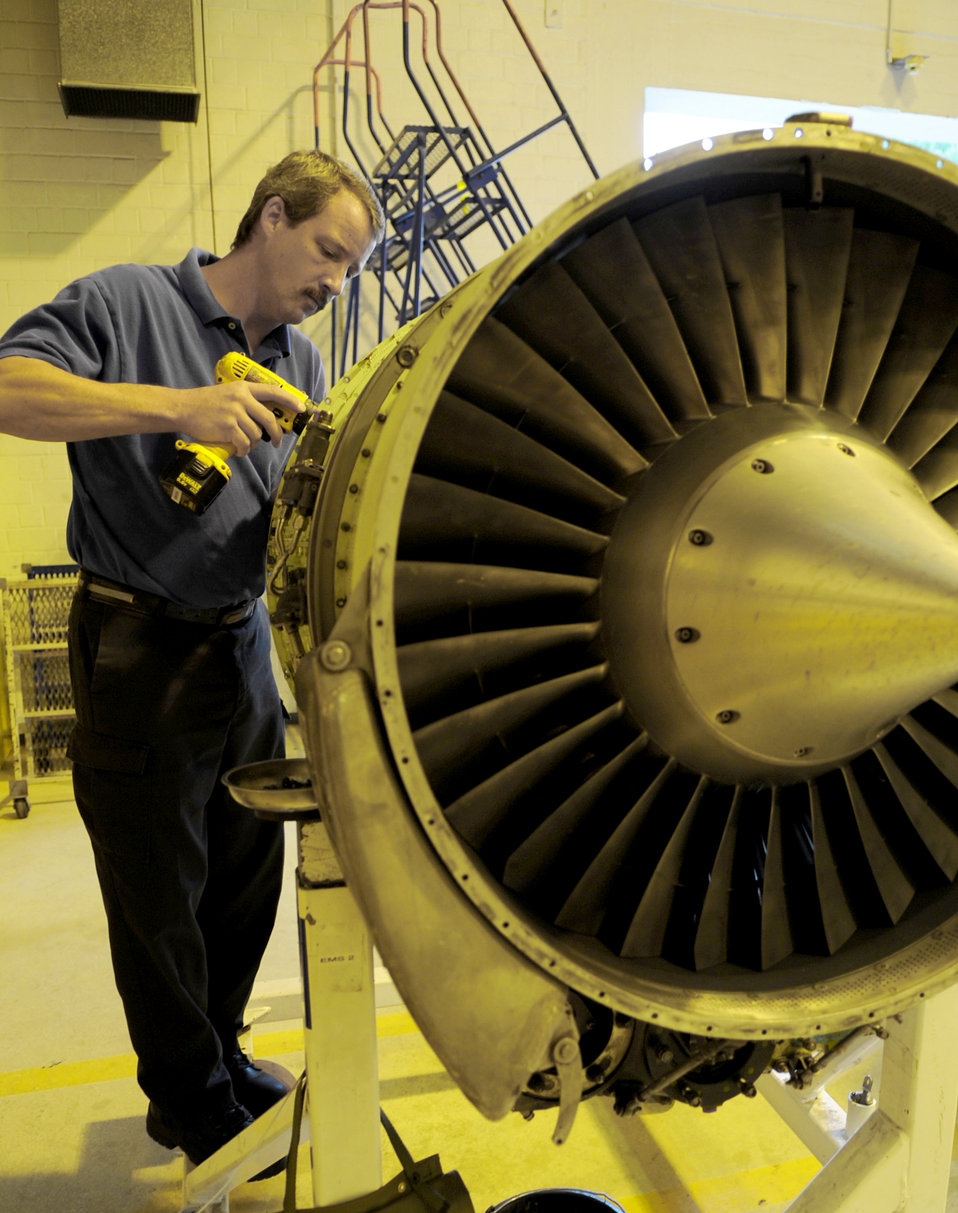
Taking it apart

Perry Palhamus, a DynCorp International C-21A aircraft mechanic, dismantles a turbine engine shroud during an engine swap Sept. 13, 2010, at Ramstein Air Base, Germany.